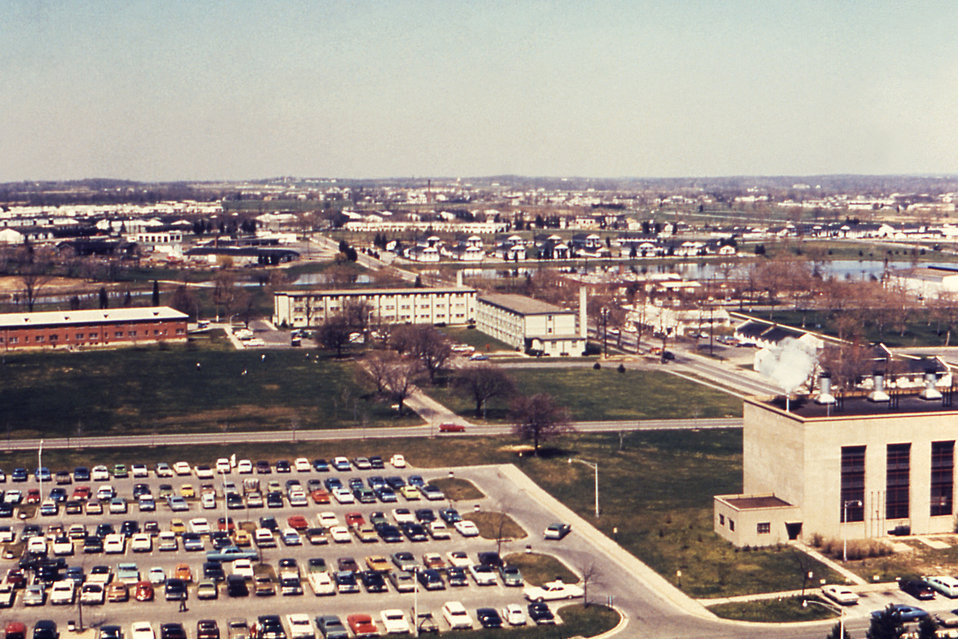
This 1976 image depicts an aerial view of the Fort Dix, New Jersey, barracks, which was the site of the first outbreak of the A/New Jersey/76 strain of influenza A (H1N1) serotypes, which in 1976 were labeled Hsw1N1, influenza virus.